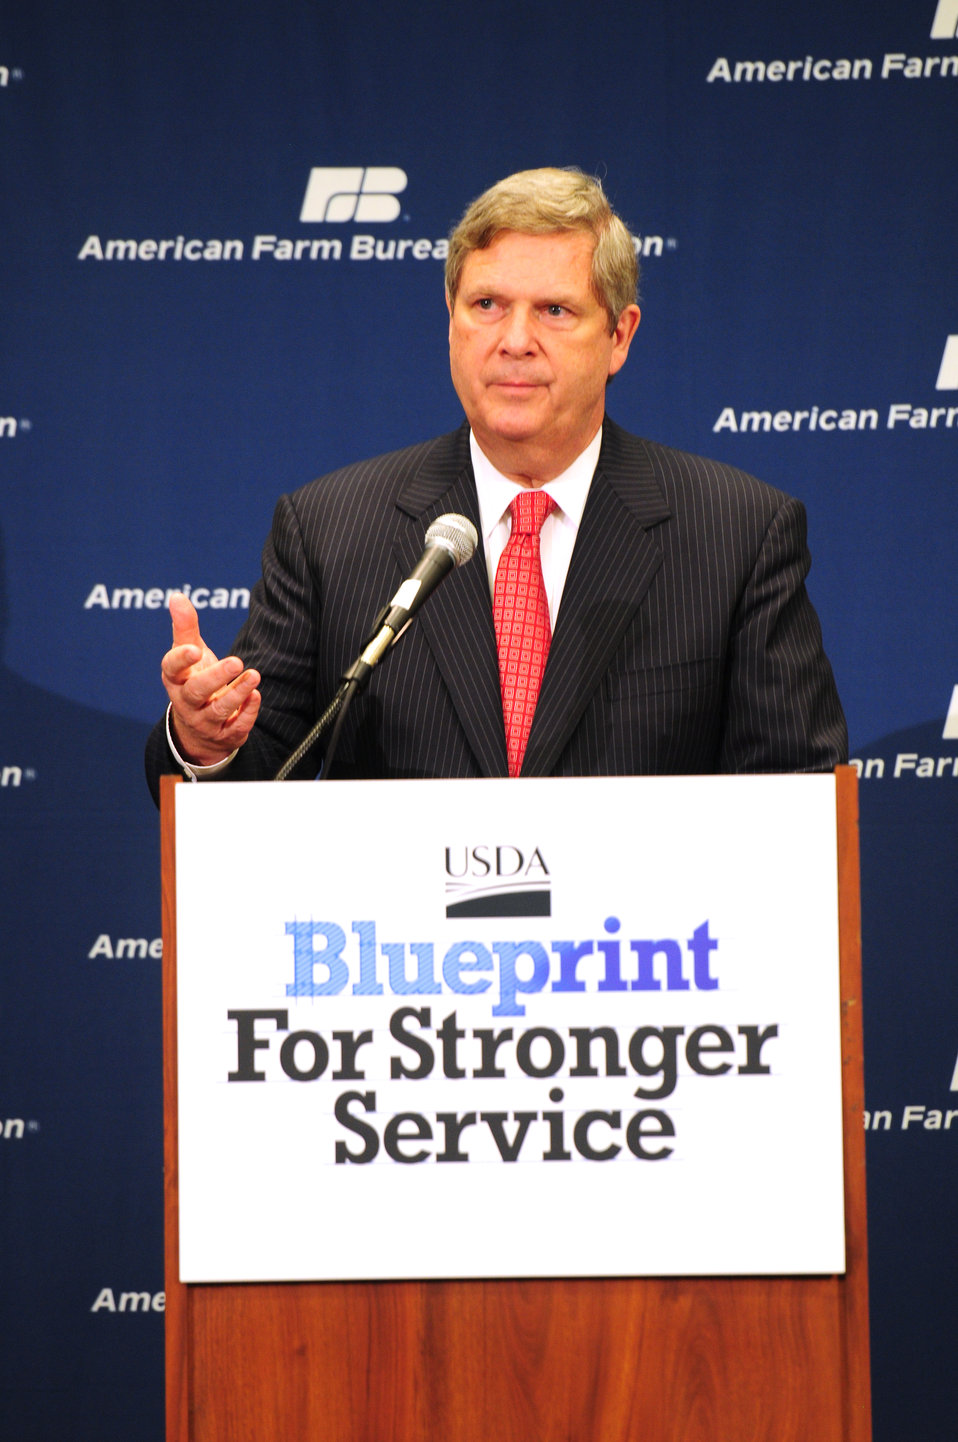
Agriculture Secretary Tom Vilsack presents USDA's Blueprint for Stronger Service, a plan to Increase Efficiency in USDA Operations, on Monday, January 9, 2012 in Honolulu, Hawaii.